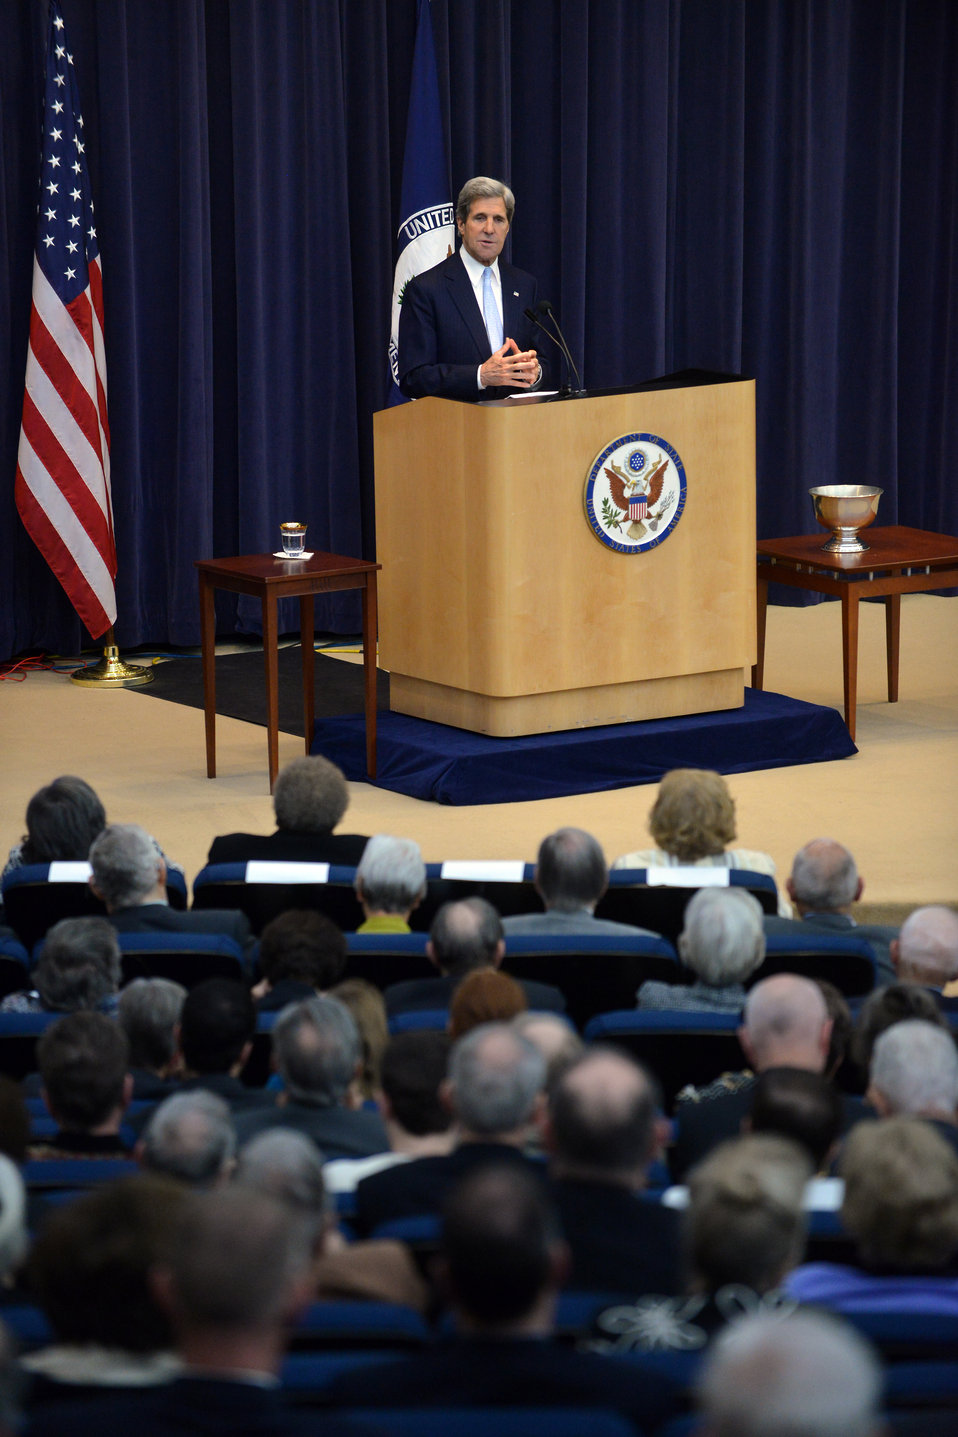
Secretary Kerry Delivers Remarks at the Foreign Affairs Day Celebration

U.S. Secretary of State John Kerry delivers the Keynote Address at the Foreign Affairs Day Celebration at the U.S. Department of State in Washington, D.C., on May 3, 2013.